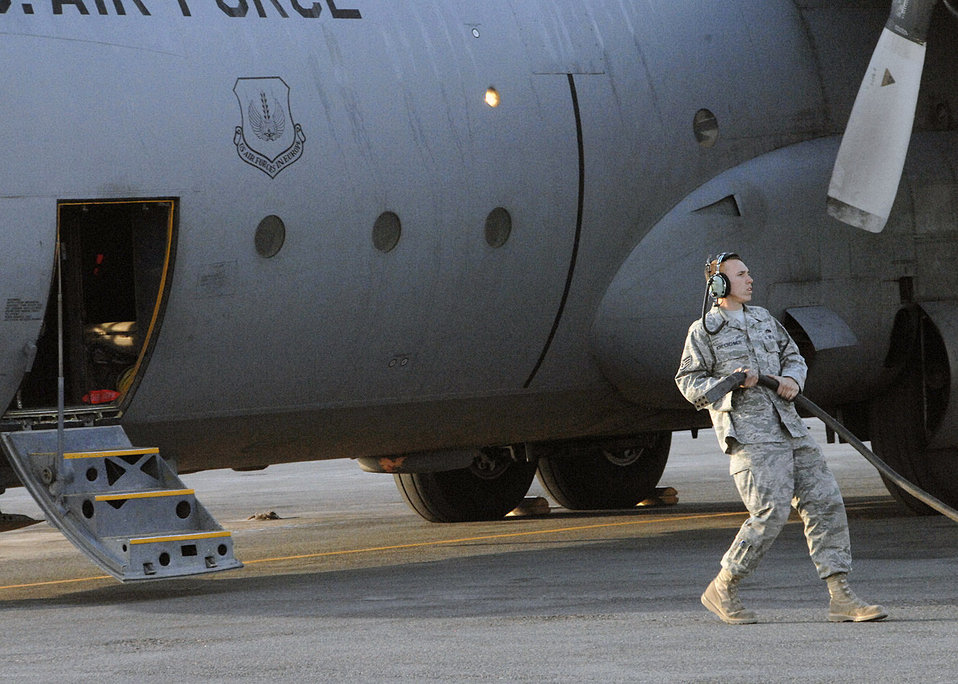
C-130 Final Flight

Staff Sgt. Brad Kretschmer, crew chief for C-130 Hercules no. 1847 at an air base in Southwest Asia, finishes his maintenance check after his C-130 completed its final combat mission Jan. 28. After 47 years of service, the aircraft is being retired. Sergeant Kretschmer has been the crew chief for this aircraft for the last three years, and will fly with the aircraft back to Germany.